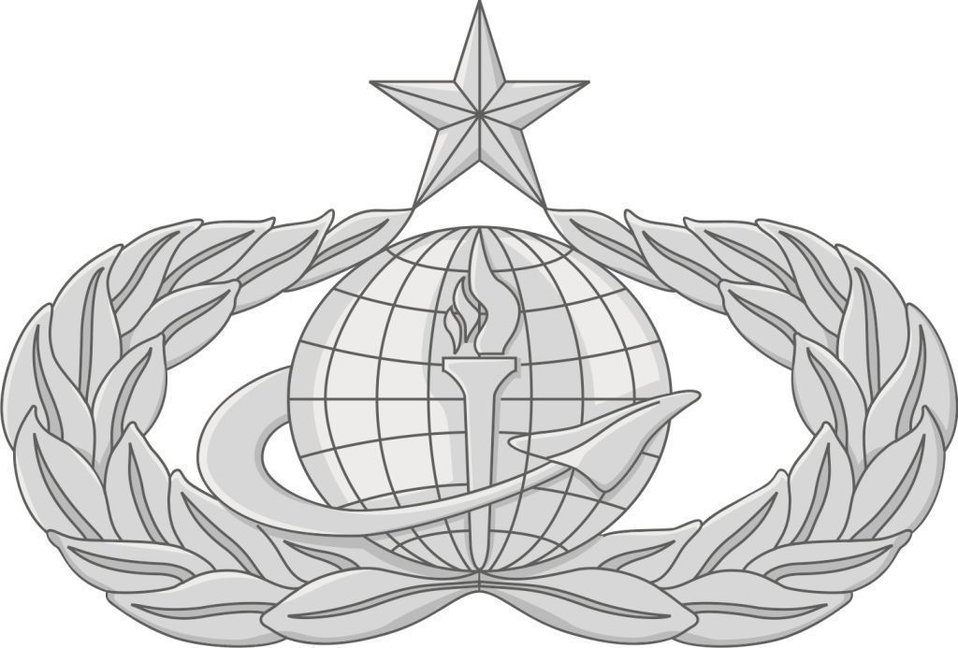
38F Force Support badge

The occupational badge for the new 38F Force Support Air Force Specialty Code incorporates the torch from the services badge and the delta from the manpower and personnel badge. Force support officers are now authorized to wear the new badge at the expertise level ? basic, senior (shown) or master - attained in their legacy career field. All Force support officers must begin wearing the badge by Aug. 1.